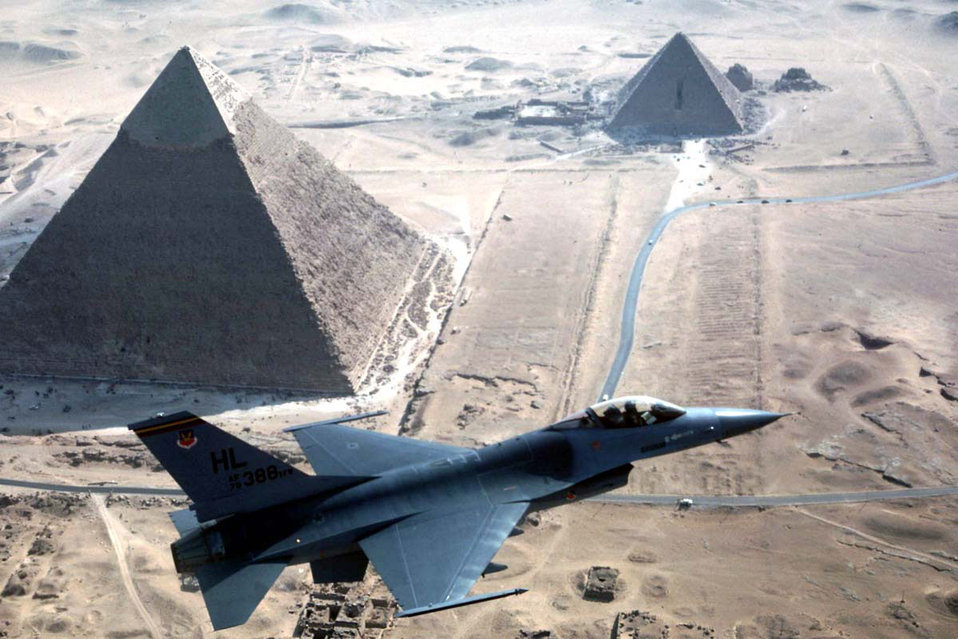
Wonders of the world

OVER EGYPT -- The F-16 Fighting Falcon is a compact, multirole fighter aircraft. It is highly maneuverable and has proven itself in air-to-air combat and air-to-surface attack. It provides a relatively low-cost, high-performance weapon system for the United States and allied nations.